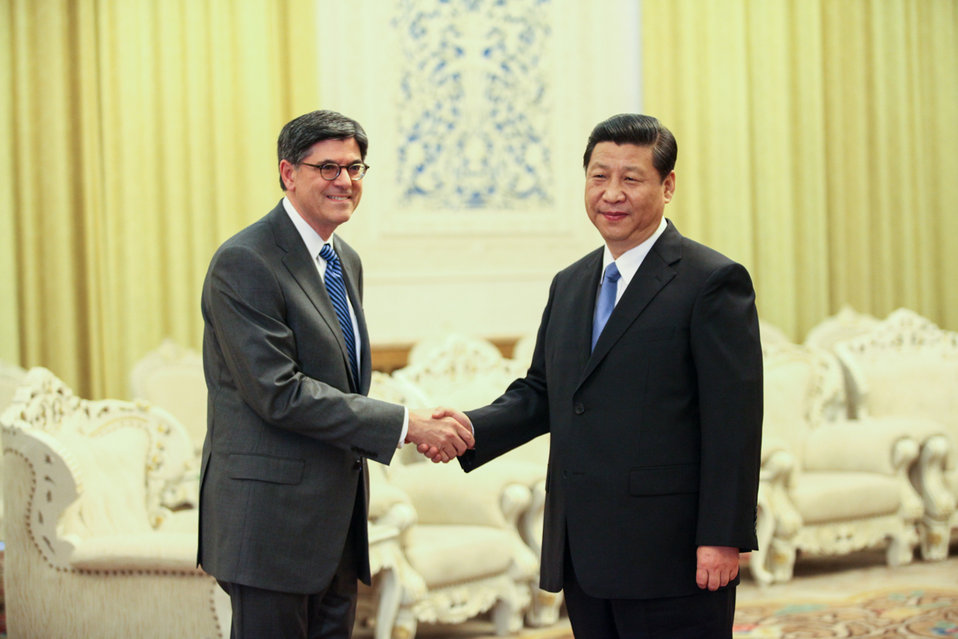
Secretary Lew met with Chinese President Xi Jinping in Beijing on Tuesday, March 19, 2013.